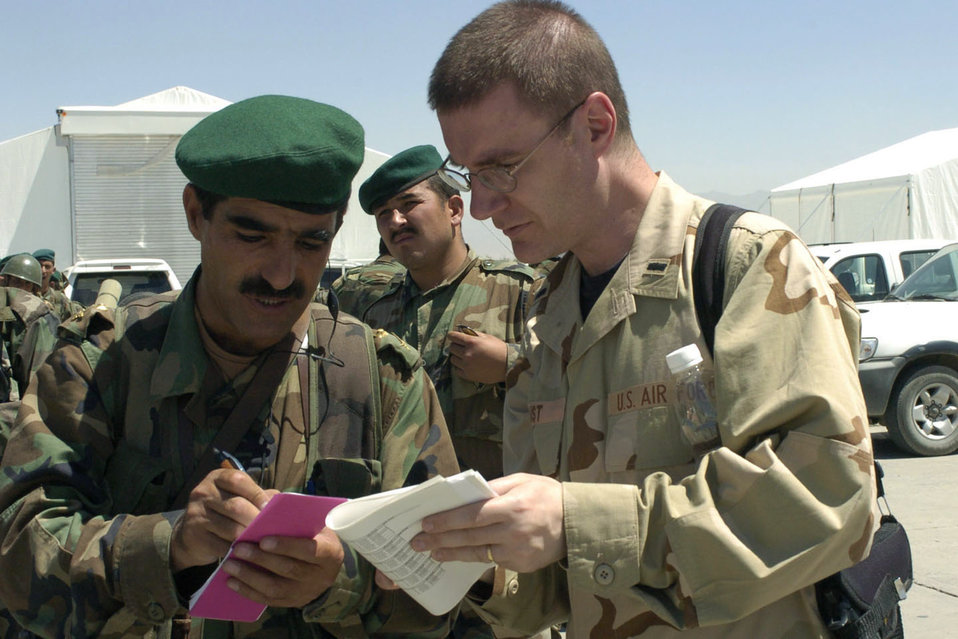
Afghan support

KABUL, Afghanistan -- First Lt. John Faust coordinates with an Afghan soldier about the number of soldiers going out on the next C-130 Hercules to Shindand National Airport on Aug. 15. The U.S. Air Force is helping to airlift several Afghan battalions to Shindand to retake control of government property seized as a result of factional fighting in the area. Lieutenant Faust is an operations watch officer for Combined Forces Command-Afghanistan in Kabul.